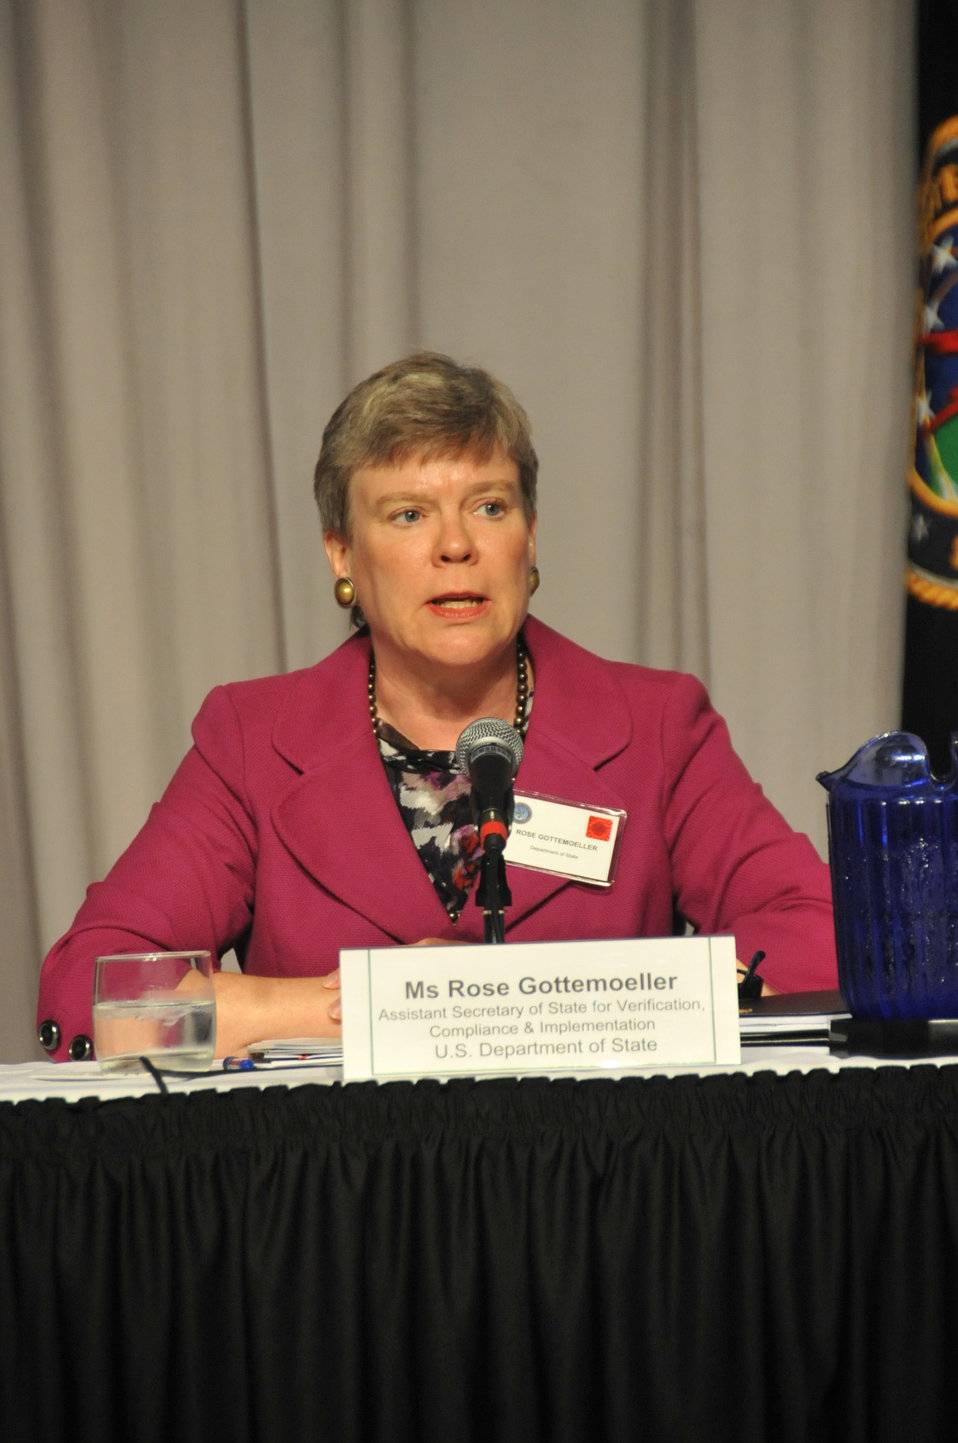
Assistant Secretary of State Rose Gottemoeller Delivers Remarks at U.S. Strategic Command Deterrence Symposium

Ms. Rose Gottemoeller, Assistant Secretary of State for Verification, Compliance and Implementation, speaks during the 'Contributions of the U.S. Government to 21st Century National Security Strategy,' panel at the 2010 United States Strategic Command Deterrence Symposium, Aug. 11, 2010, at the Qwest Center, Omaha, Neb. This annual symposium, brought together academic, government, military and international experts with the goal of exploring a broad range of deterrence issues during a single event. 'Exploring the Many Facets of Deterrence ' is the theme for the 2010 symposium.